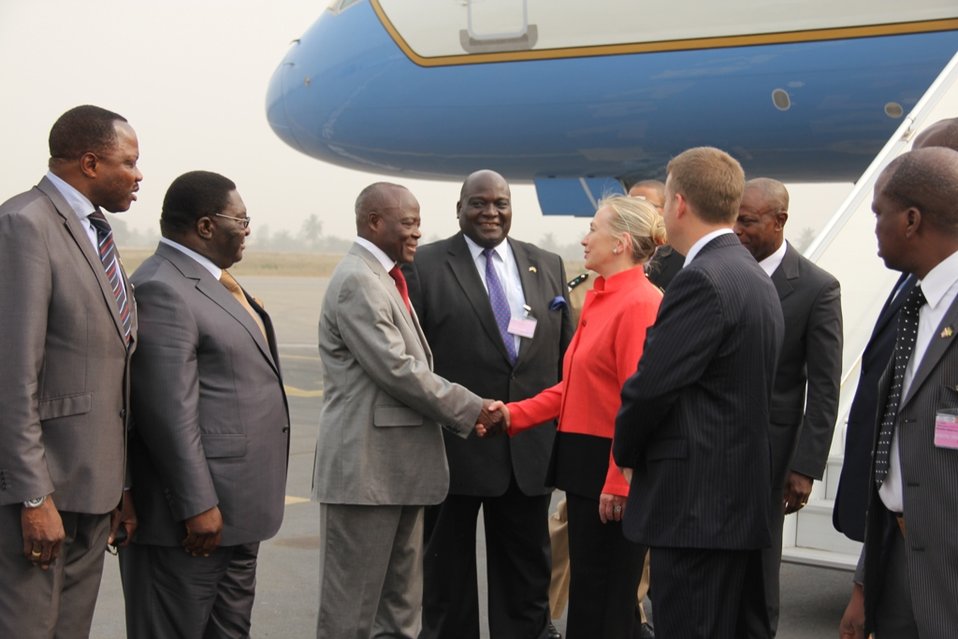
Secretary Clinton Is Greeted By Togolese Civil Service Minister Foli-Bazi

U.S. Secretary of State Hillary Rodham Clinton is greeted by Togolese Civil Service Minister Katari Foli-Bazi, while Togolese Foreign Minister Elliot Ohin and Togolese Territorial Administration Minister Pascal Bodjona look on in Lome, Togo, on January 17, 2012.